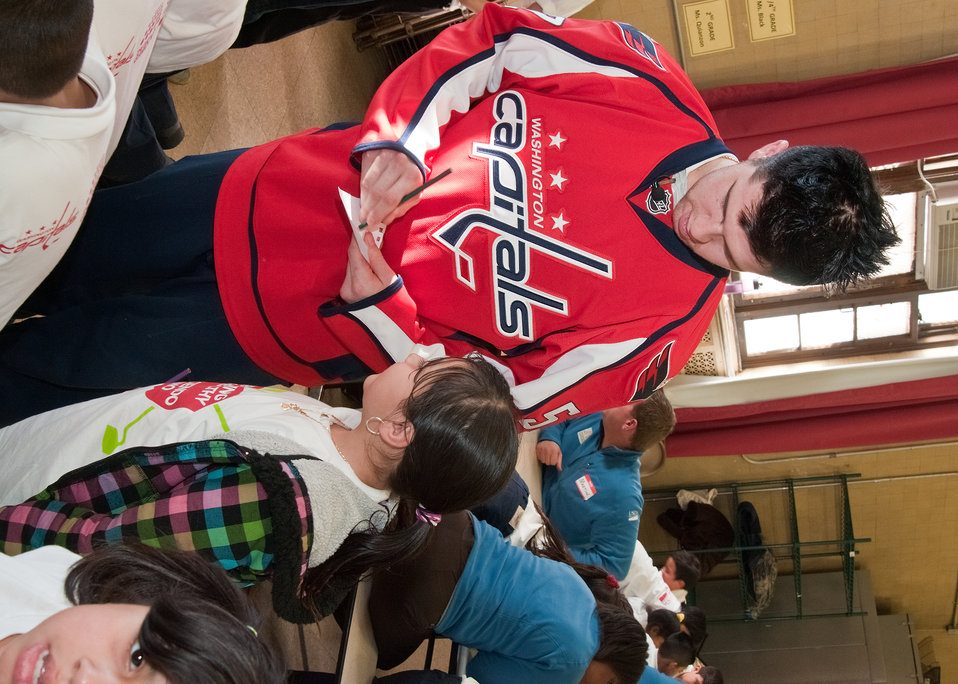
Mike Green, Washington Capitals and 2011 NHL All-Star defenseman (left) signs an autograph for Leslie Reyes (right) a second grade student at Powell Elementary School in Washington, D.C.. Green participated in a People’s Garden Workshop with Comcast SportsNet Analyst Alan May, teachers and parents Thursday, February 10, 2011. The Washington Capitals adopted Powell Elementary as part of the team’s community outreach efforts. Children from pre-Kindergarten to Fourth Grade participated in the design process led by United States Department of Agriculture employees.